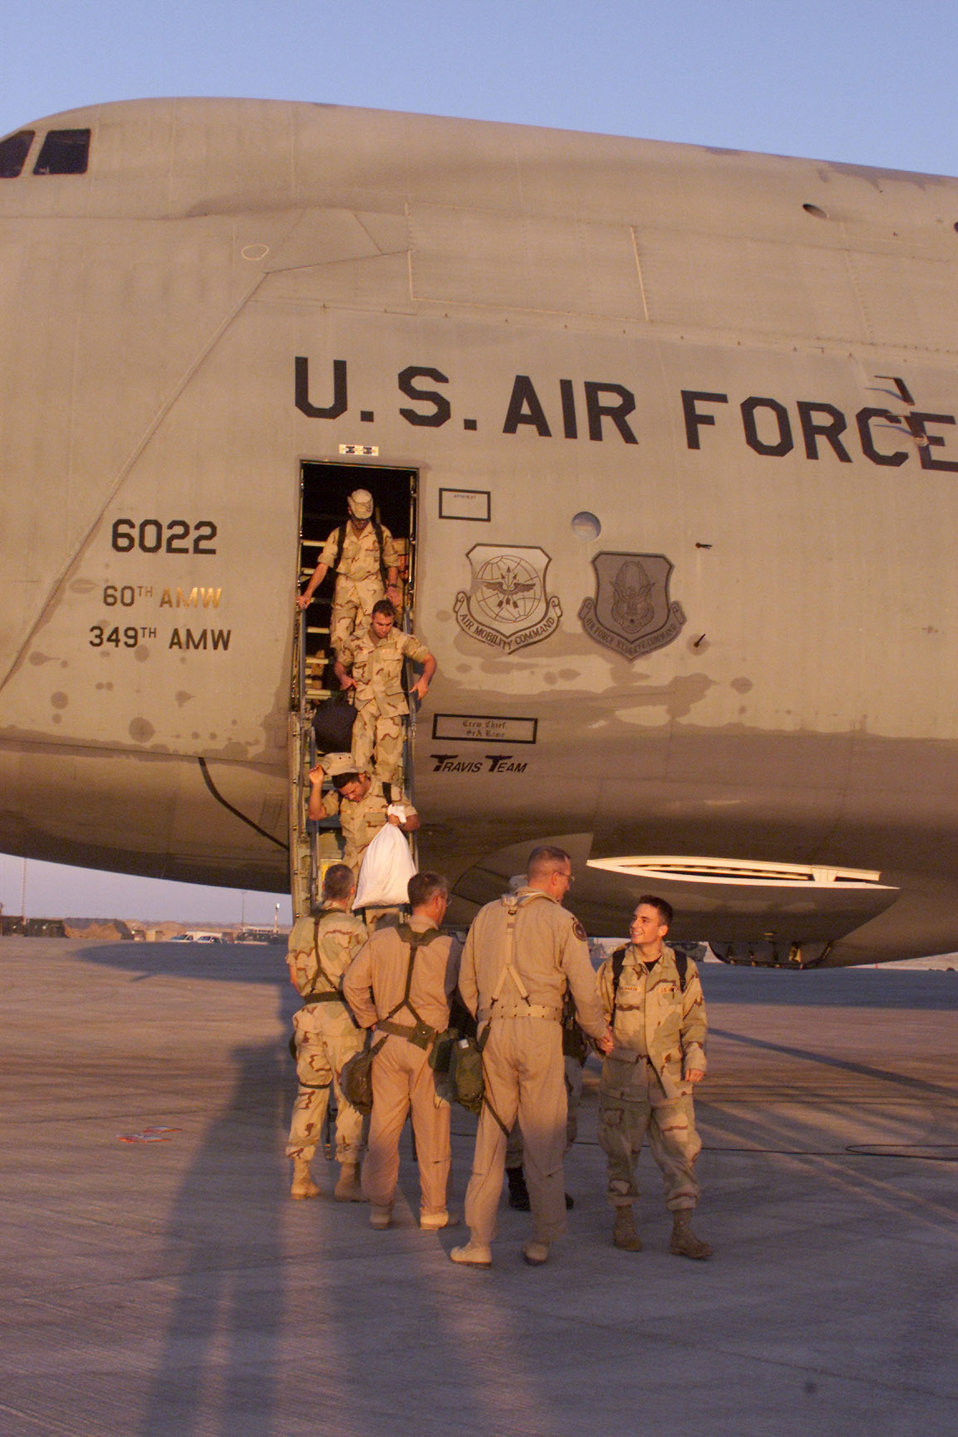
Welcome aboard

OPERATION ENDURING FREEDOM -– People from the 366th Air Expeditionary Wing are greeted by the 366th Operations Group staff after arriving in a C-5 Galaxy at an operating location in support of the U.S. Central Command execution of Operation Enduring Freedom.